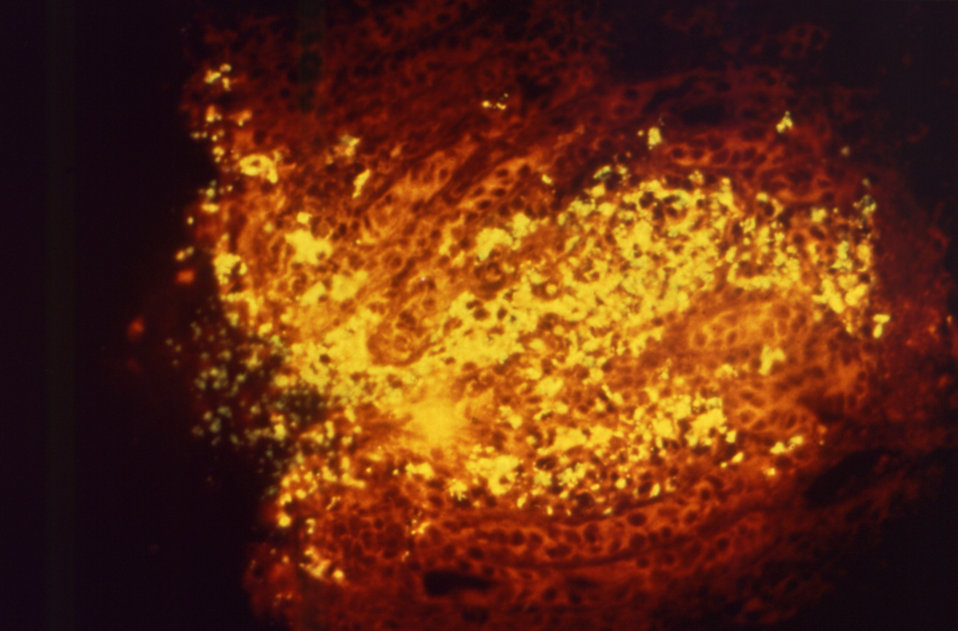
This micrograph reveals some of the histopathologic changes found in an intestinal tissue specimen indicative of first-stage shigellosis. At this point in the pathogenesis, the Shigella sp. bacteria had only just begun to penetrate the intestinal mucosal lining. See PHIL 15088, where you'll note the frank loss of normal simple columnar cytoarchitectural patency in late-stage shigellosis.